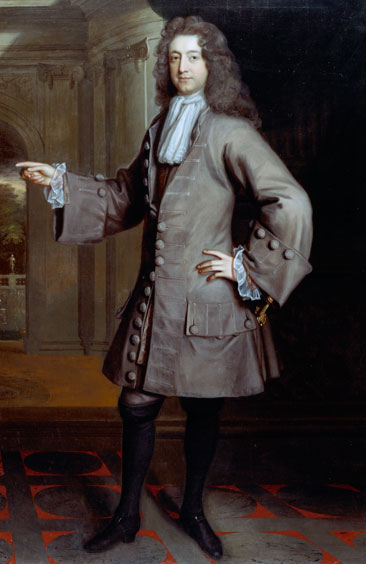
LordChancellorWilliamCowper